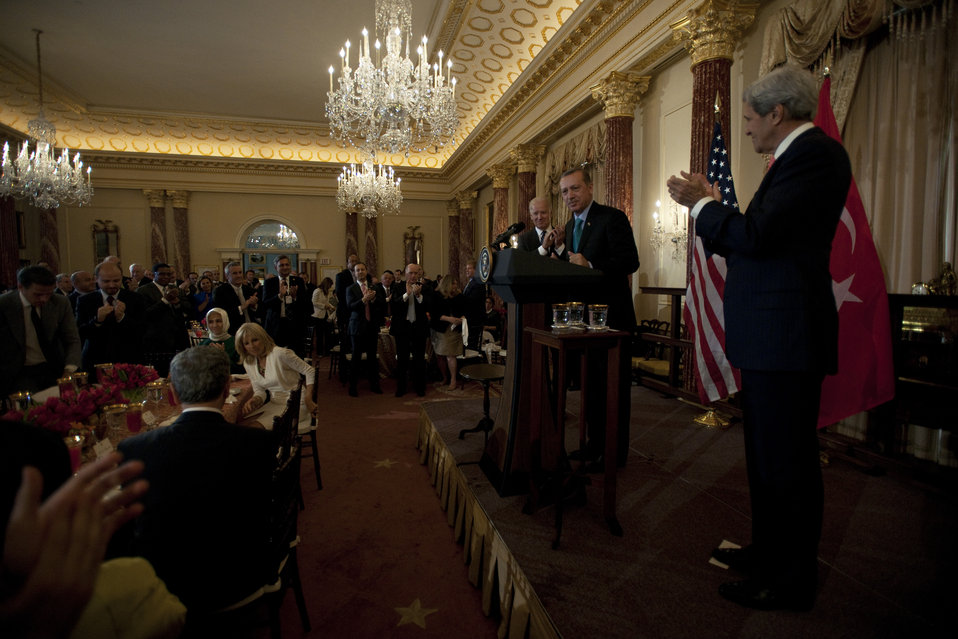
Secretary Kerry Listens as Turkish Prime Minister Erdogan Delivers Remarks

U.S. Secretary of State John Kerry, right, and U.S. Vice President Joseph Biden, left, listen as Turkish Prime Minister Recep Tayyip Erdogan at the U.S. Department of State in Washington, D.C., on May 16, 2013.